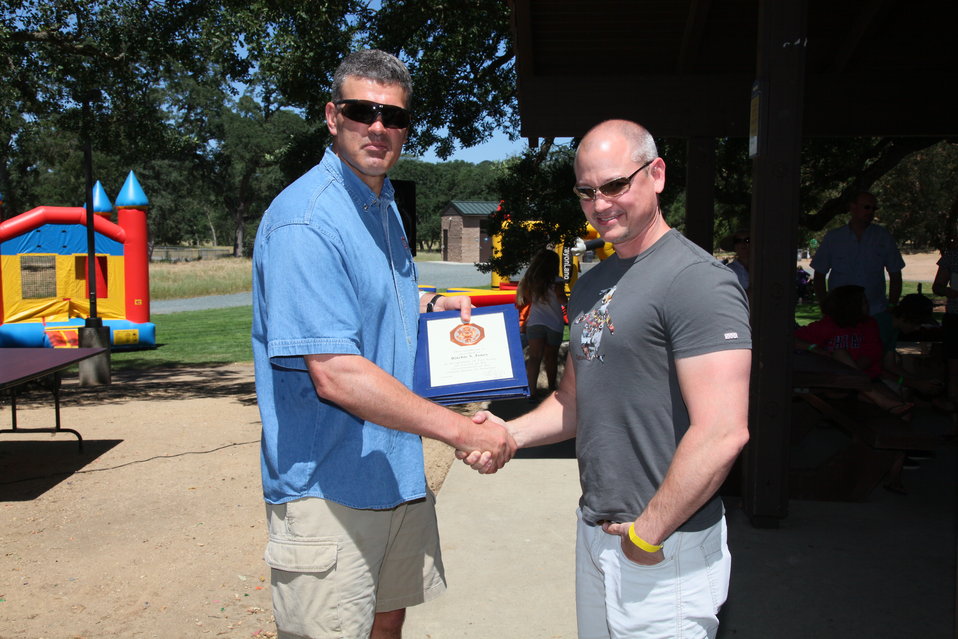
2011 Annual Picnic